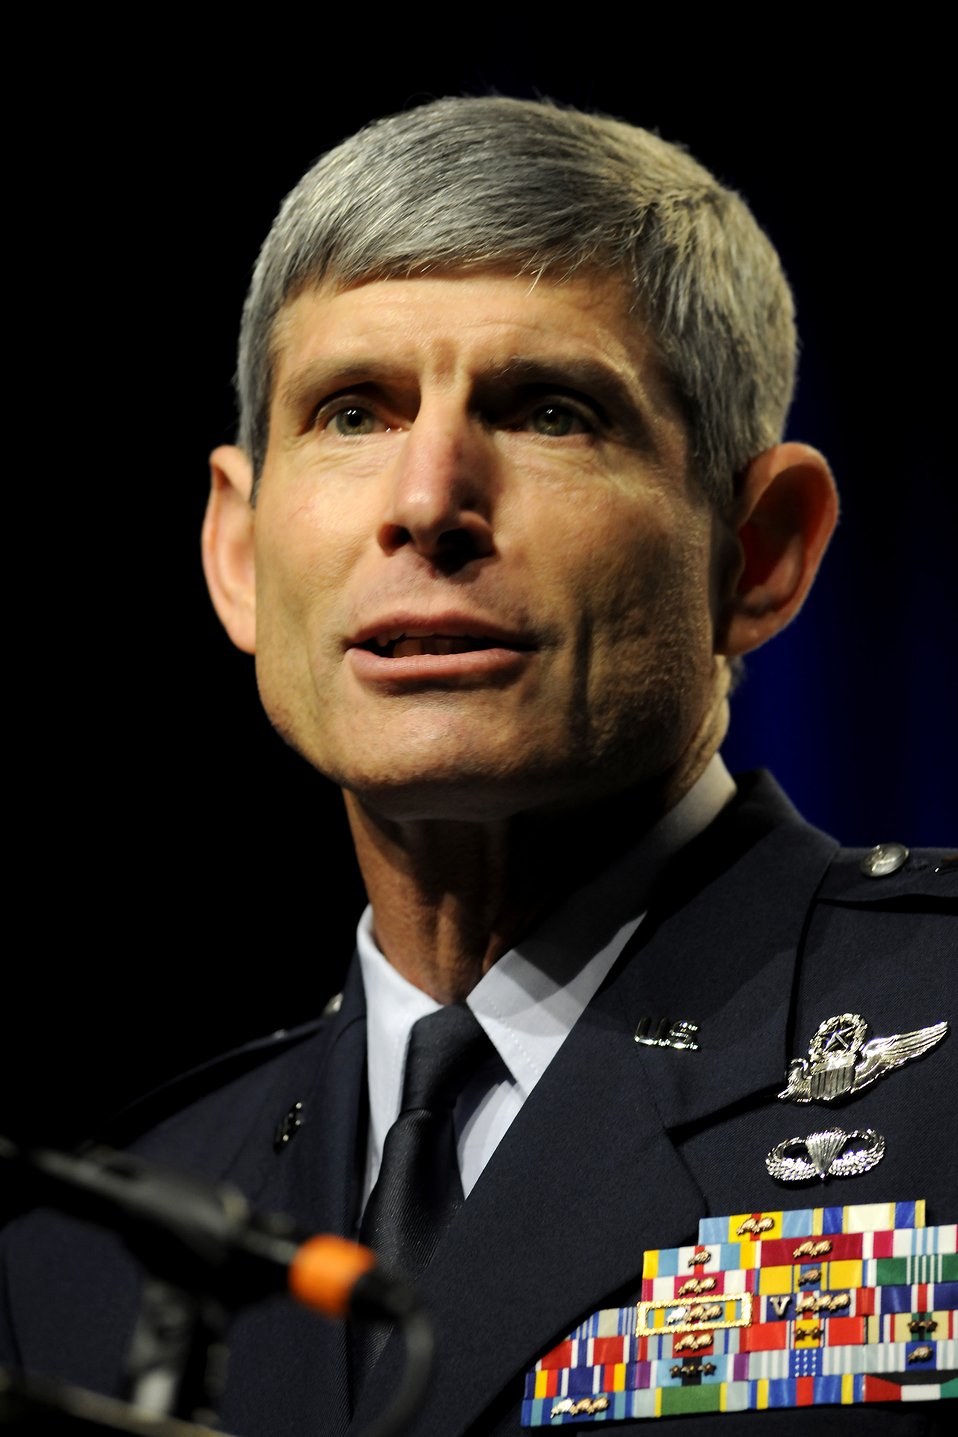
AFA

Air Force Chief of Staff Gen. Norton Schwartz delivers his keynote speech today during the Air Force Association Air and Space Conference and Technology Exposition Sept. 15, 2009, at Oxon Hill, Md.